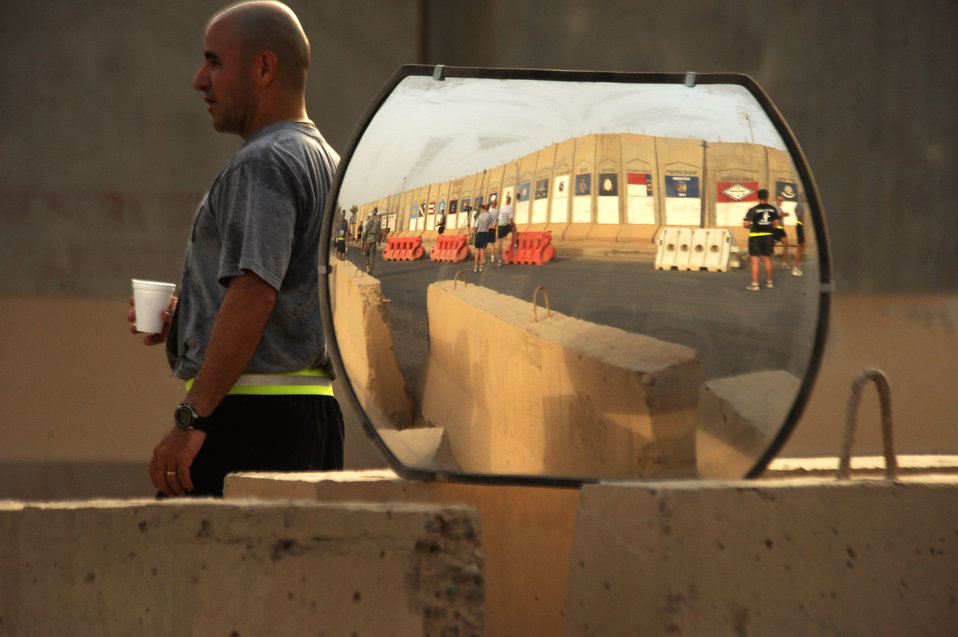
Servicemembers take part in Baghdad Boilermaker

One of the more than 240 deployed servicemembers who participated in the first Baghdad Boilermaker 15-kilometer race June 13 at Sather Air Base, Iraq, cools down following the race. The race was organized by Master Sgts. James Carrabba and Jeffrey Conant who have both participated in the Utica, N.Y., Boilermaker for years.